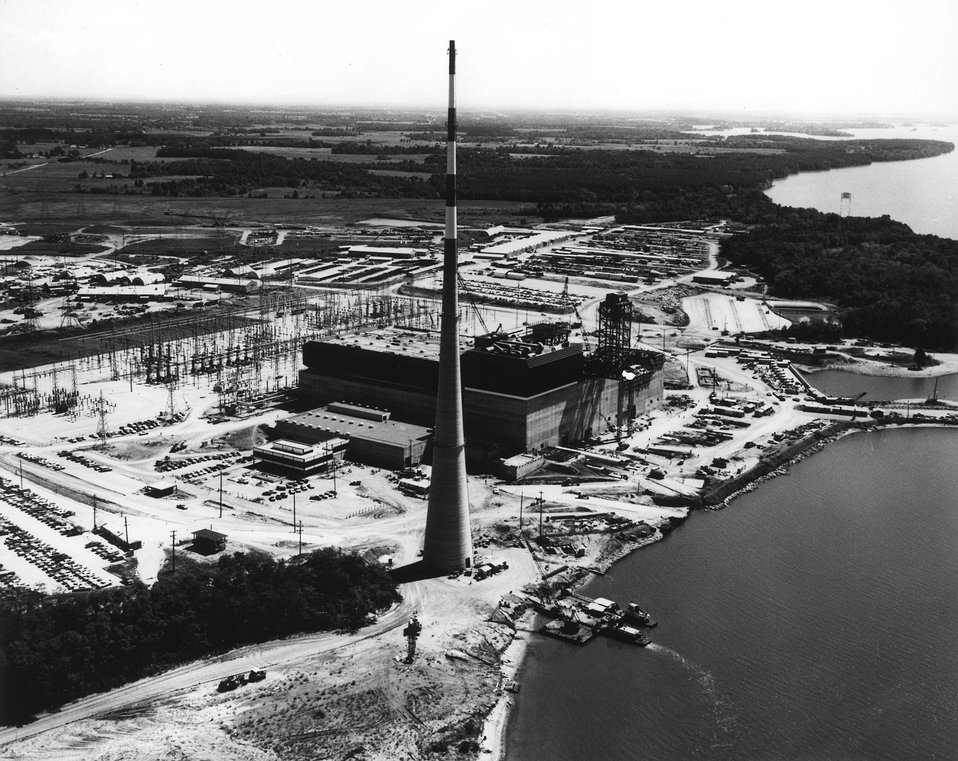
Brown's Ferry...Loading of uranium dioxide fuel into TVA's Browns Ferry Nuclear Power Plant is under construction at a site on Wheeler Lake 10 miles southwest of Athens, Alabama. Circa 1972.